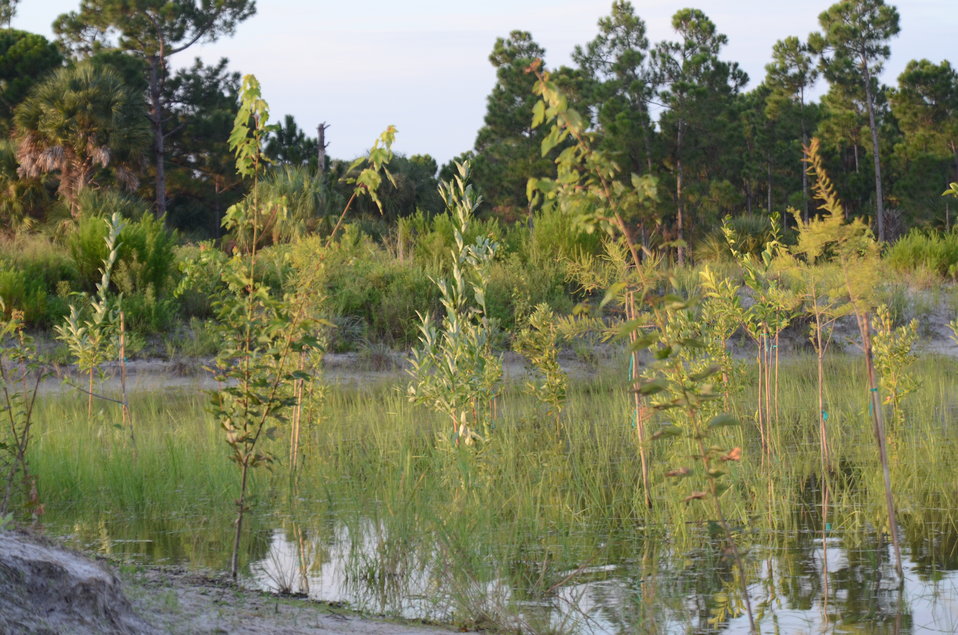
Agriculture Secretary Tom Vilsack today announced $100 million in financial assistance to acquire permanent easements from eligible landowners in four counties and assist with wetland restoration on nearly 24,000 acres of agricultural land in the Northern Everglades Watershed, FL, on Thursday, August 8, 2011.